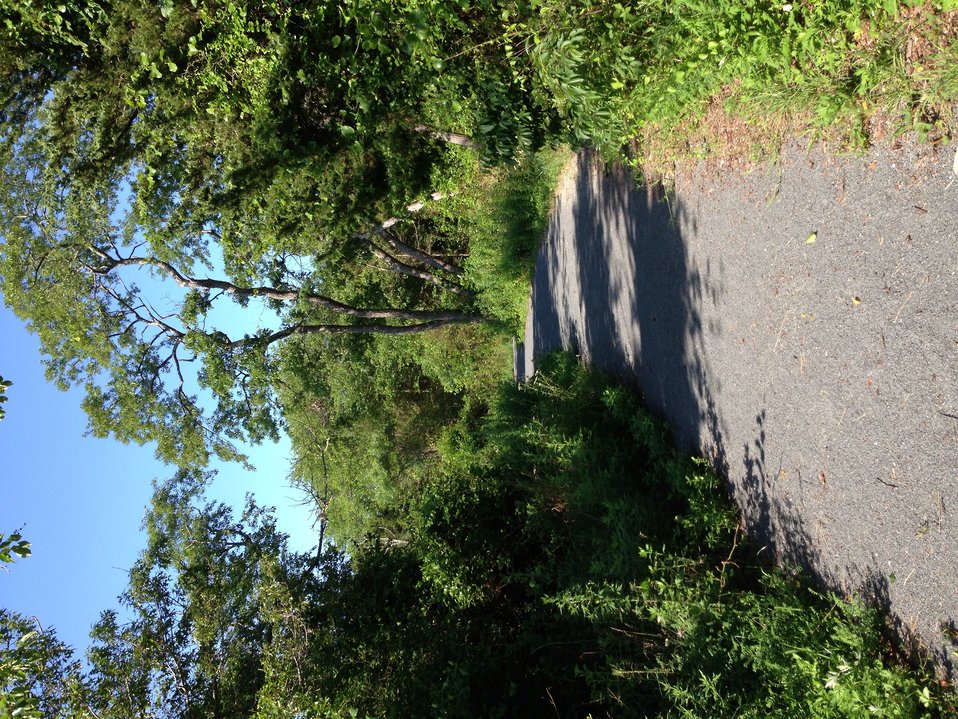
Forsythe wildlife drive after hurricane repairs

Leed's Eco-trail